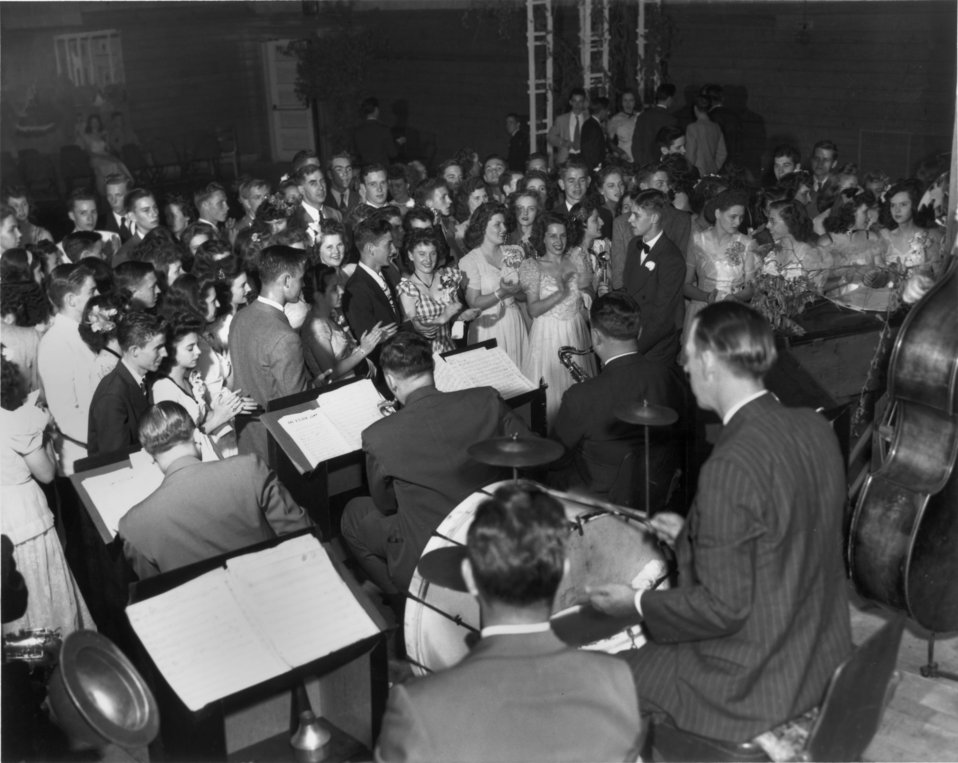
Oak Ridge High School Prom Dance

PRO559-5 DOE photo by Ed Westcott

Oak Ridge Tennessee 5/12/1945